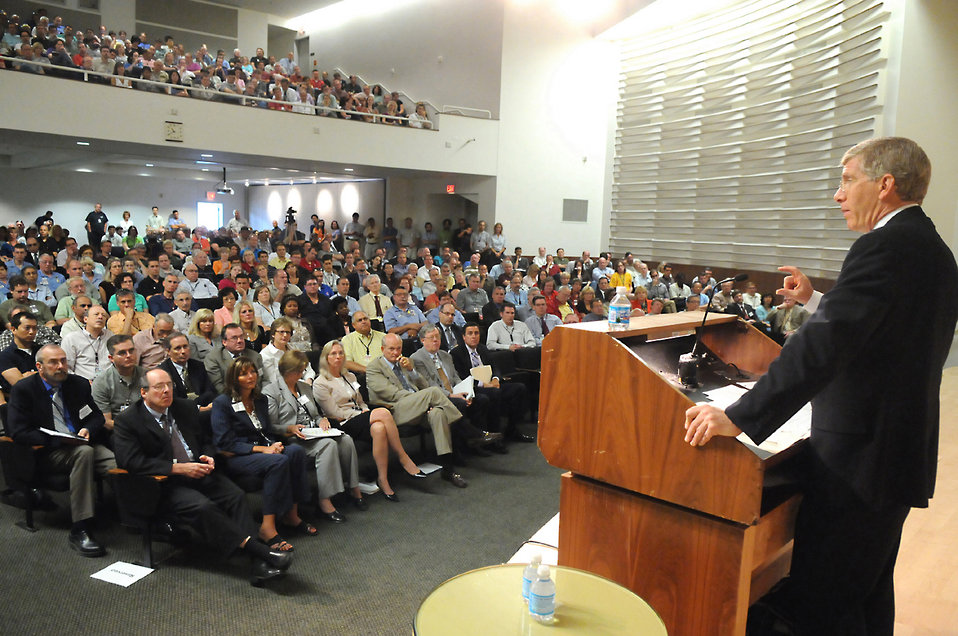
Deputy Secretary Poneman speaks to a full house

Deputy Secretary of Energy Daniel Poneman speaks to a full house at Argonne National Laboratory